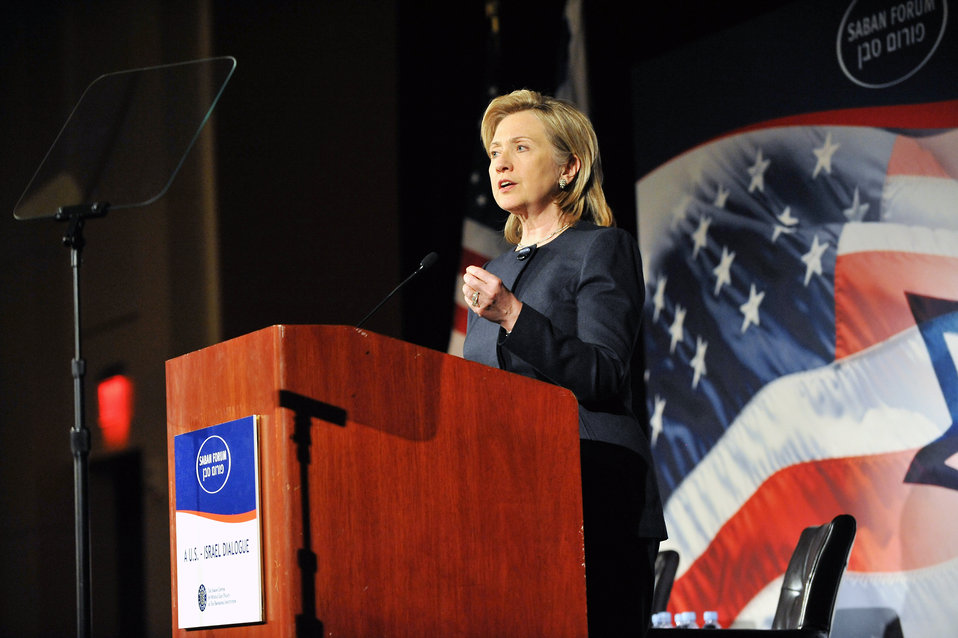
Secretary Clinton Delivers Remarks at the Saban Forum Gala Dinner

U.S. Secretary of State Hillary Rodham Clinton delivers remarks at the Saban Forum Gala Dinner at the Mandarin Hotel in Washington, D.C., on December 10, 2010.